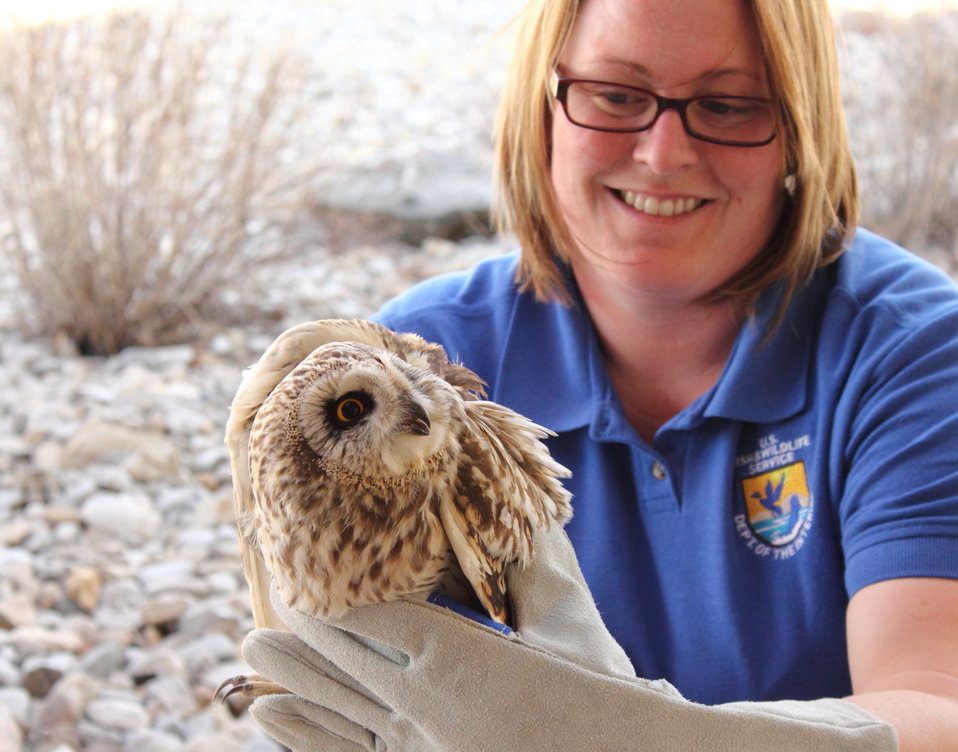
Short-eared Owl

Jackie Fox, USFWS employee, holds an injured short-eared owl on its way to a bird rehab center in Bozeman, Montana. The short-eared owl is a ground nester on prairies, in marshes and in other open country. Fairly common, the species is found across most of the United States and Canda.